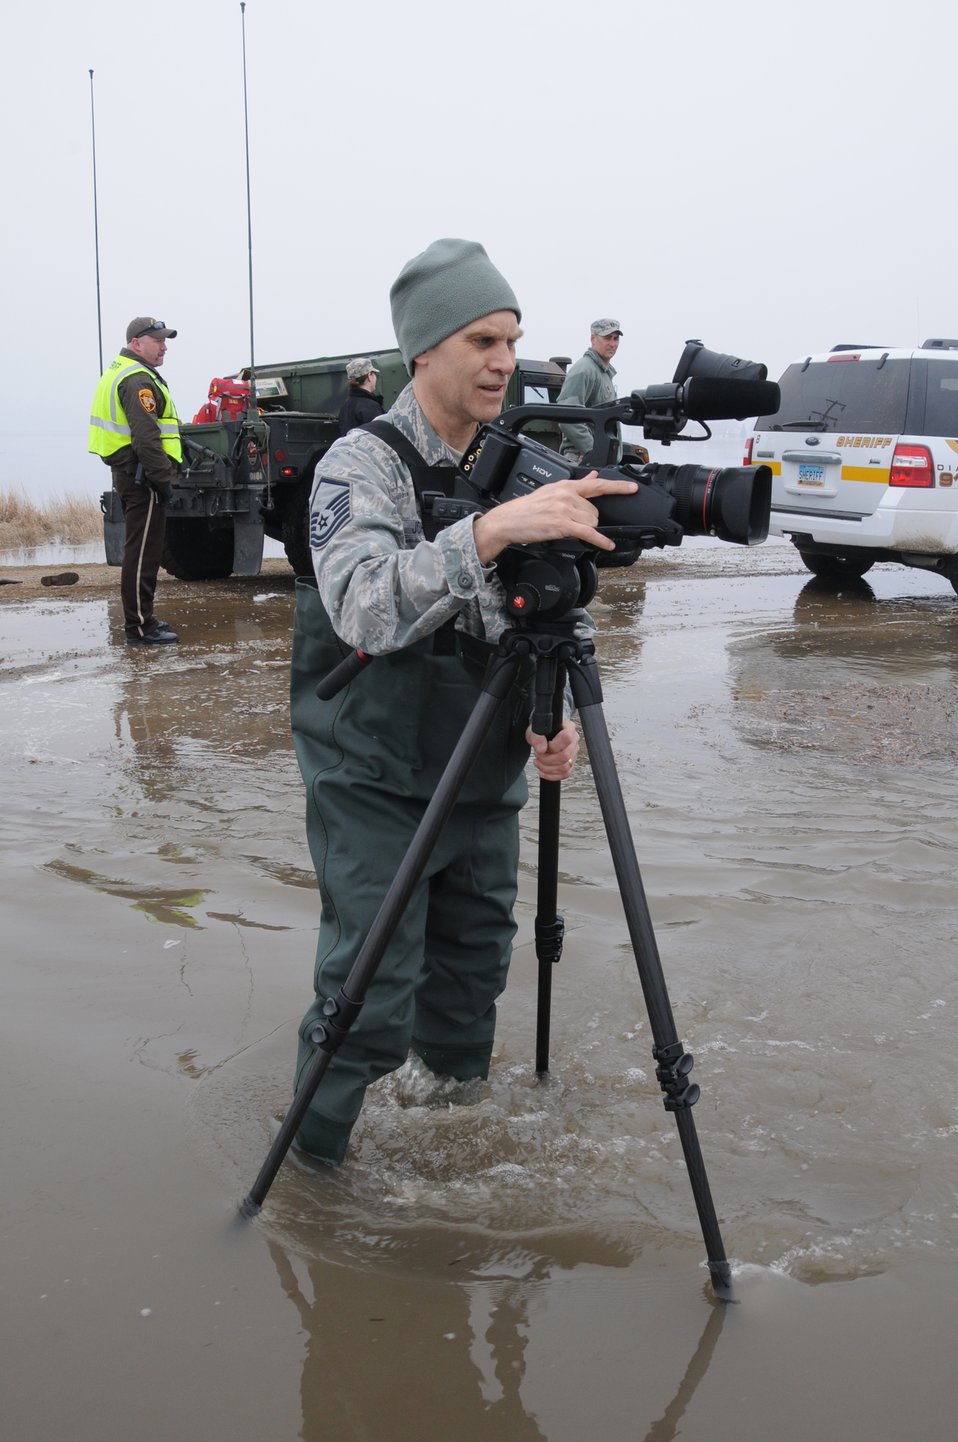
Documenting the disaster

Master Sgt. Eric Johnson wades into floodwater April 9, 2011, to capture footage of guardsmen helping evacuate residents near Harwood, N.D. Sergeant Johnson is a member of the North Dakota Air National Guard's 119th Wing.